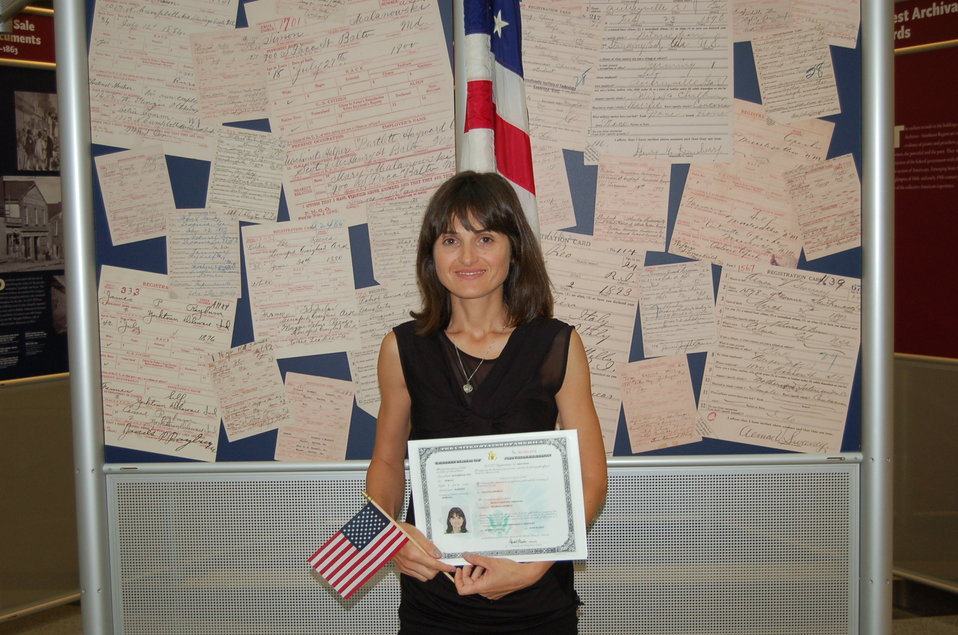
New Citizens